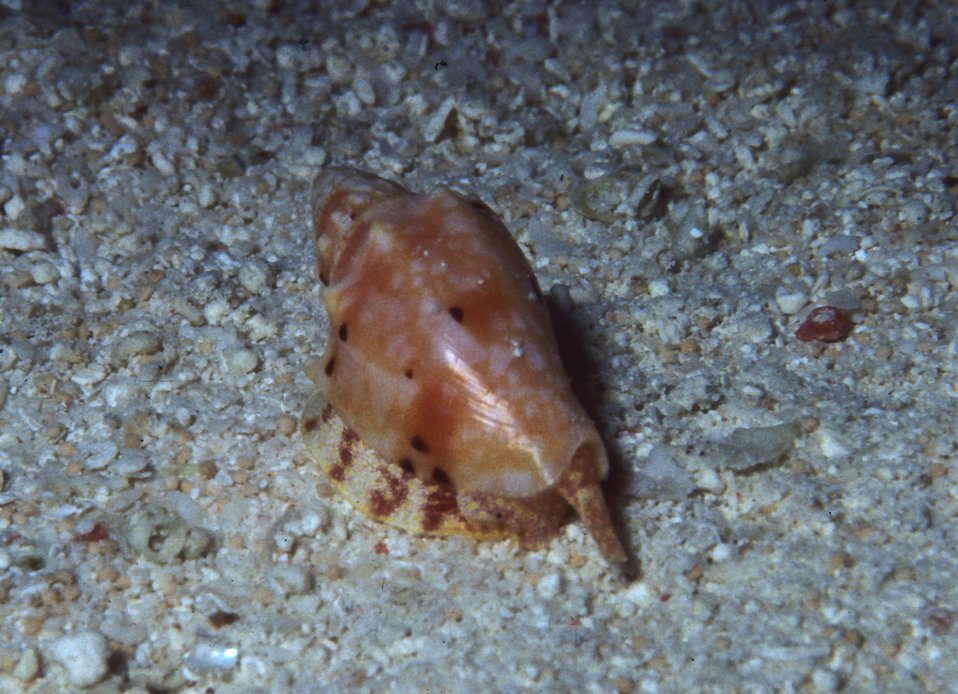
One Tree Reef. Snail with extended feeding proscis and radula.